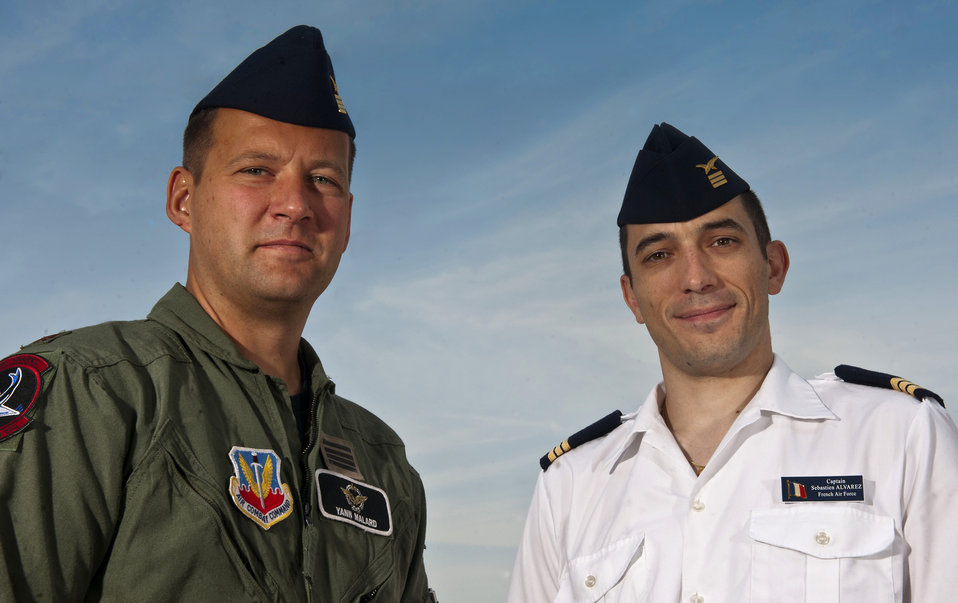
French air force exchange pilots

Moody Air Force Base, Ga., is the temporary home to two French air force pilots, Commandant (Maj.) Yann Malard (left) and Capitaine (Capt.) Sebastian Alvarez, as part of a three-year officer exchange program to integrate them with a fighter or rescue squadron as they become proficient on their particular airframes.